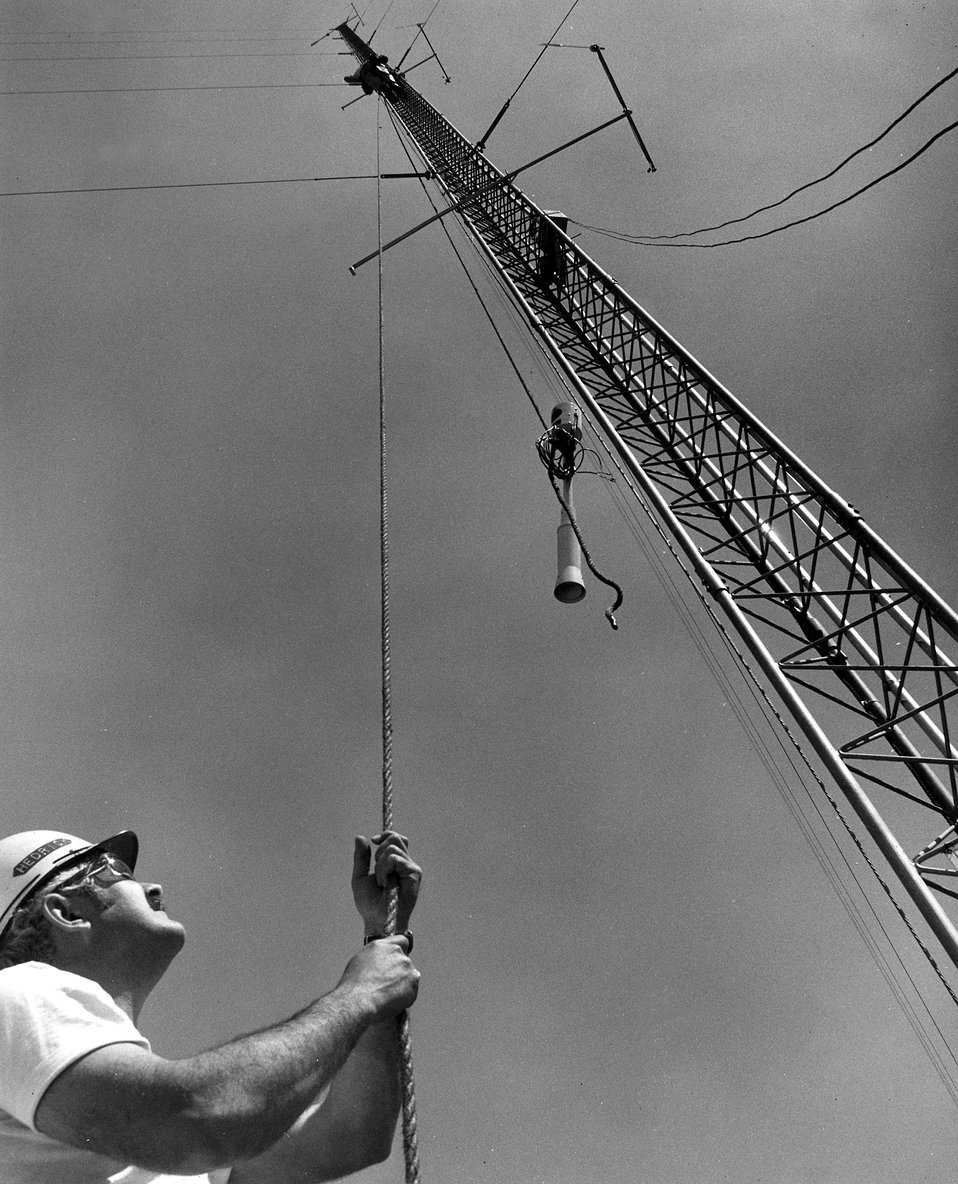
Meteorological measuring equipment is hoisted up a tall tower at the Clinch River Breeder Reactor site. c. 1974